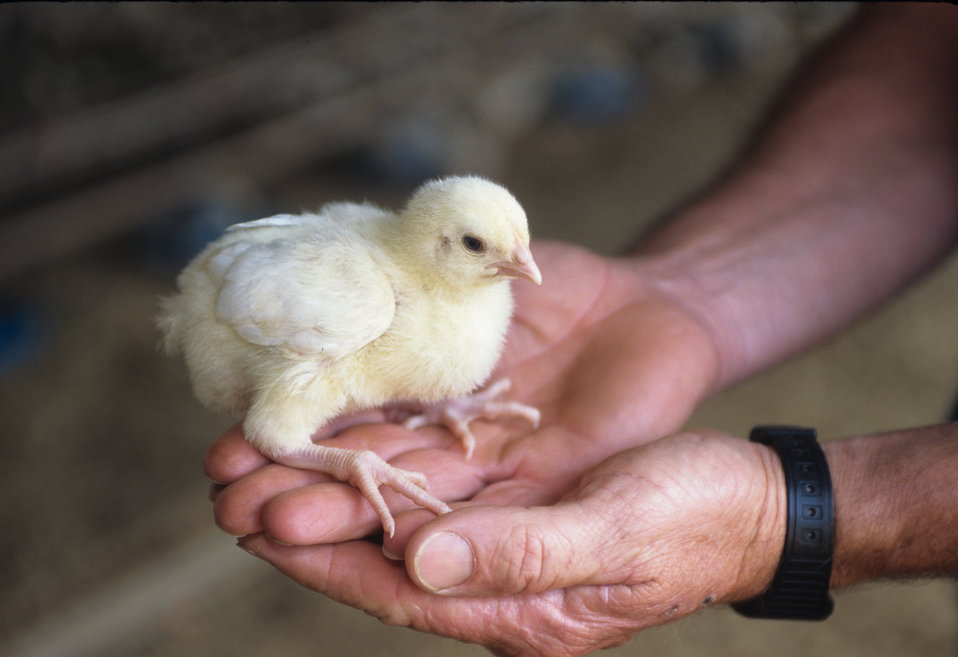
Poultry farmer in Texas holds a young chicken in his hands on September 2, 1996.